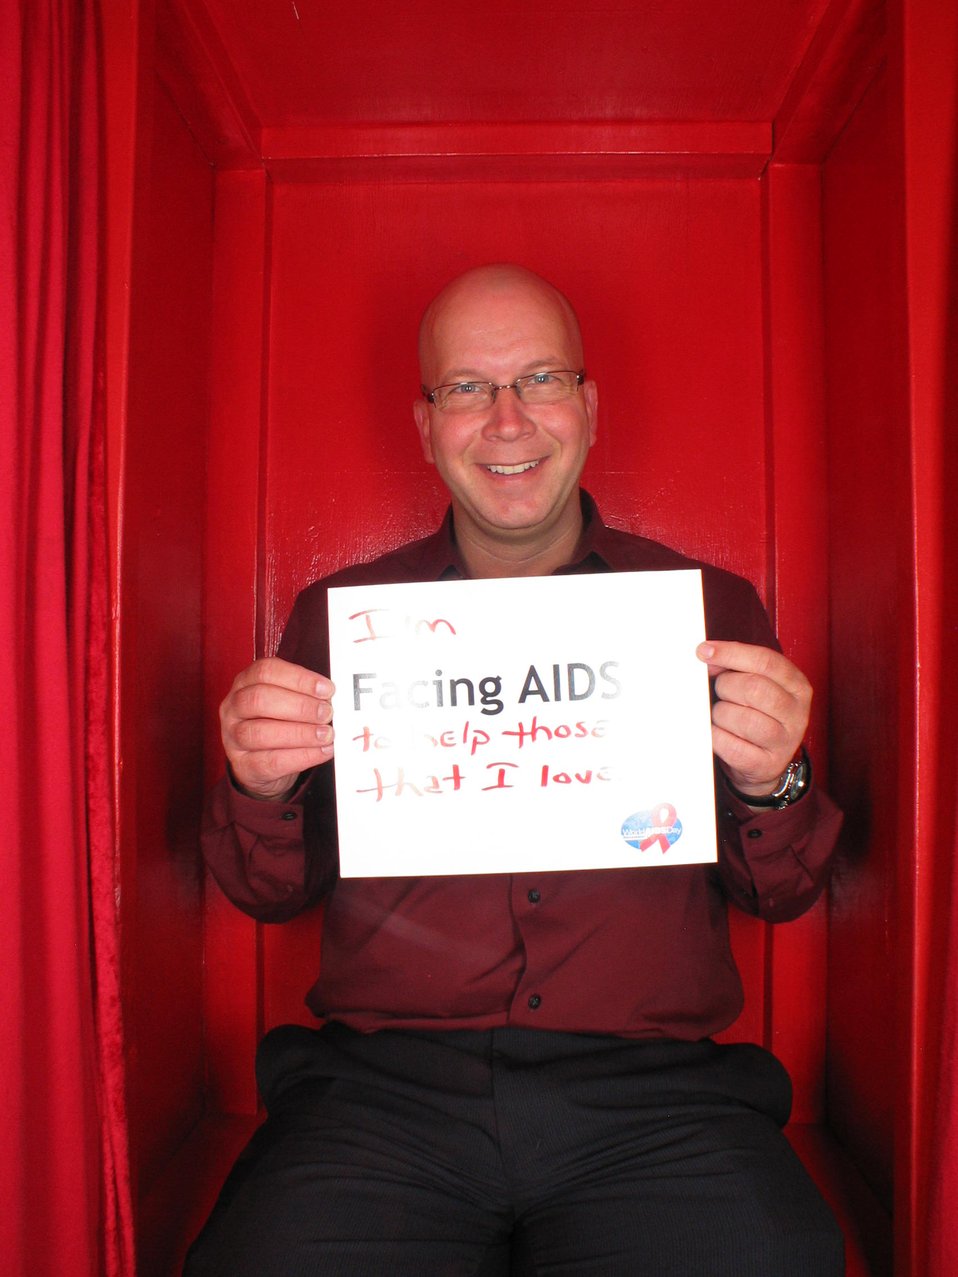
I'm Facing AIDS to help those that I love